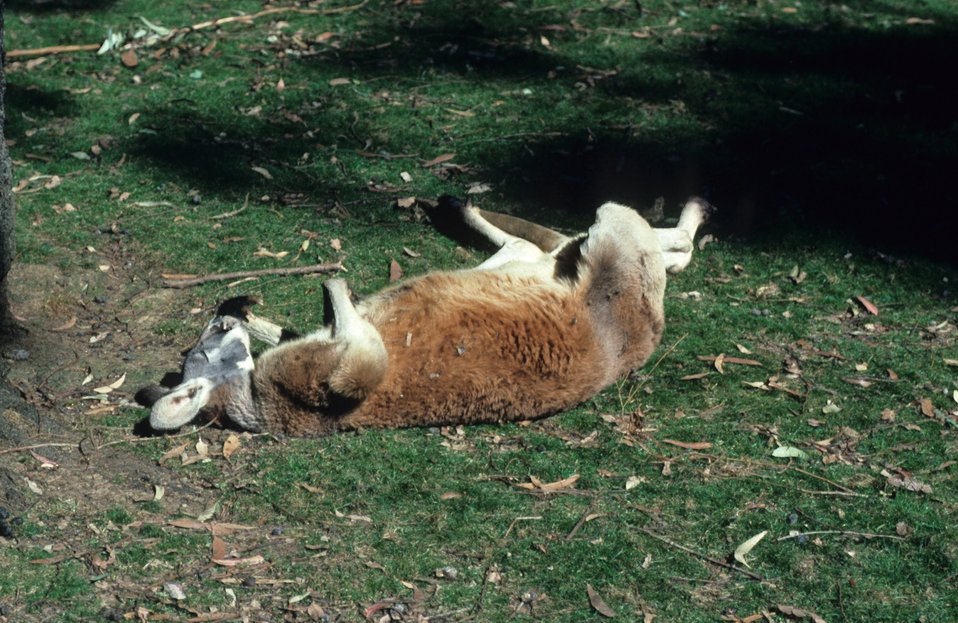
Kangaroo.